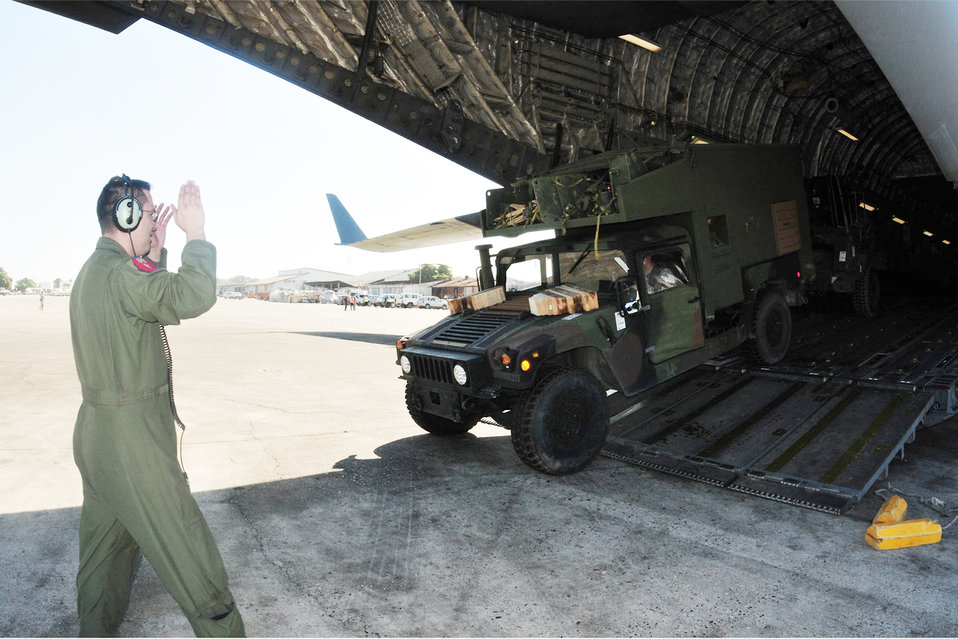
Delivering hope, relief

Parked at the Toussaint L'Ouverture International Airport in Port au Prince, Haiti, Tech. Sergeant Piper guides a Humvee out of an C-17 Globemaster III Jan. 18, 2010. Altus Air Force Base, Okla., has 10 aircrew teams and six aircraft deployed to Pope AFB, N.C., in support of Operation Unified Response.